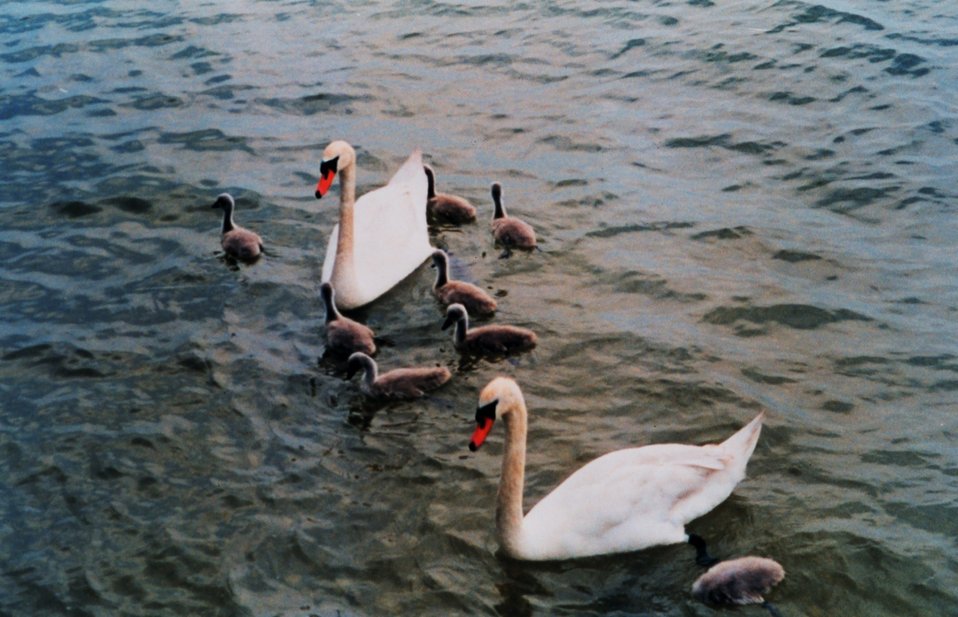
Mute swans with 8 cygnets. Mute swans are an agressive invasive species. There are now over 3,000 mute swans in the Maryland portion of the Chesapeake Bay.